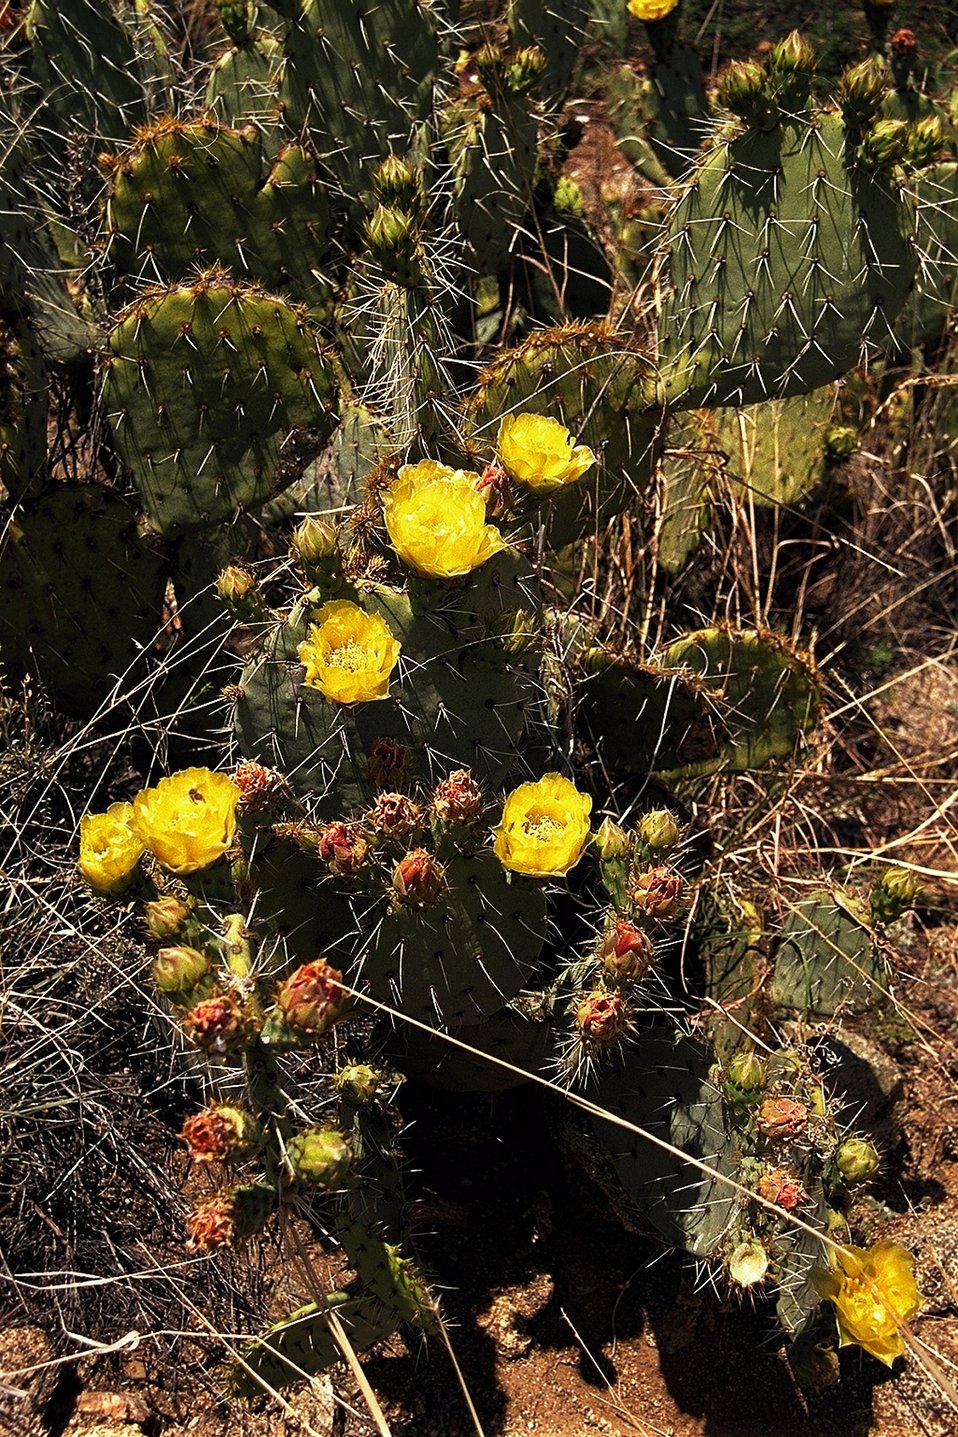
Prickly Pear Cacti in bloom in the Agua Fria National Monument.